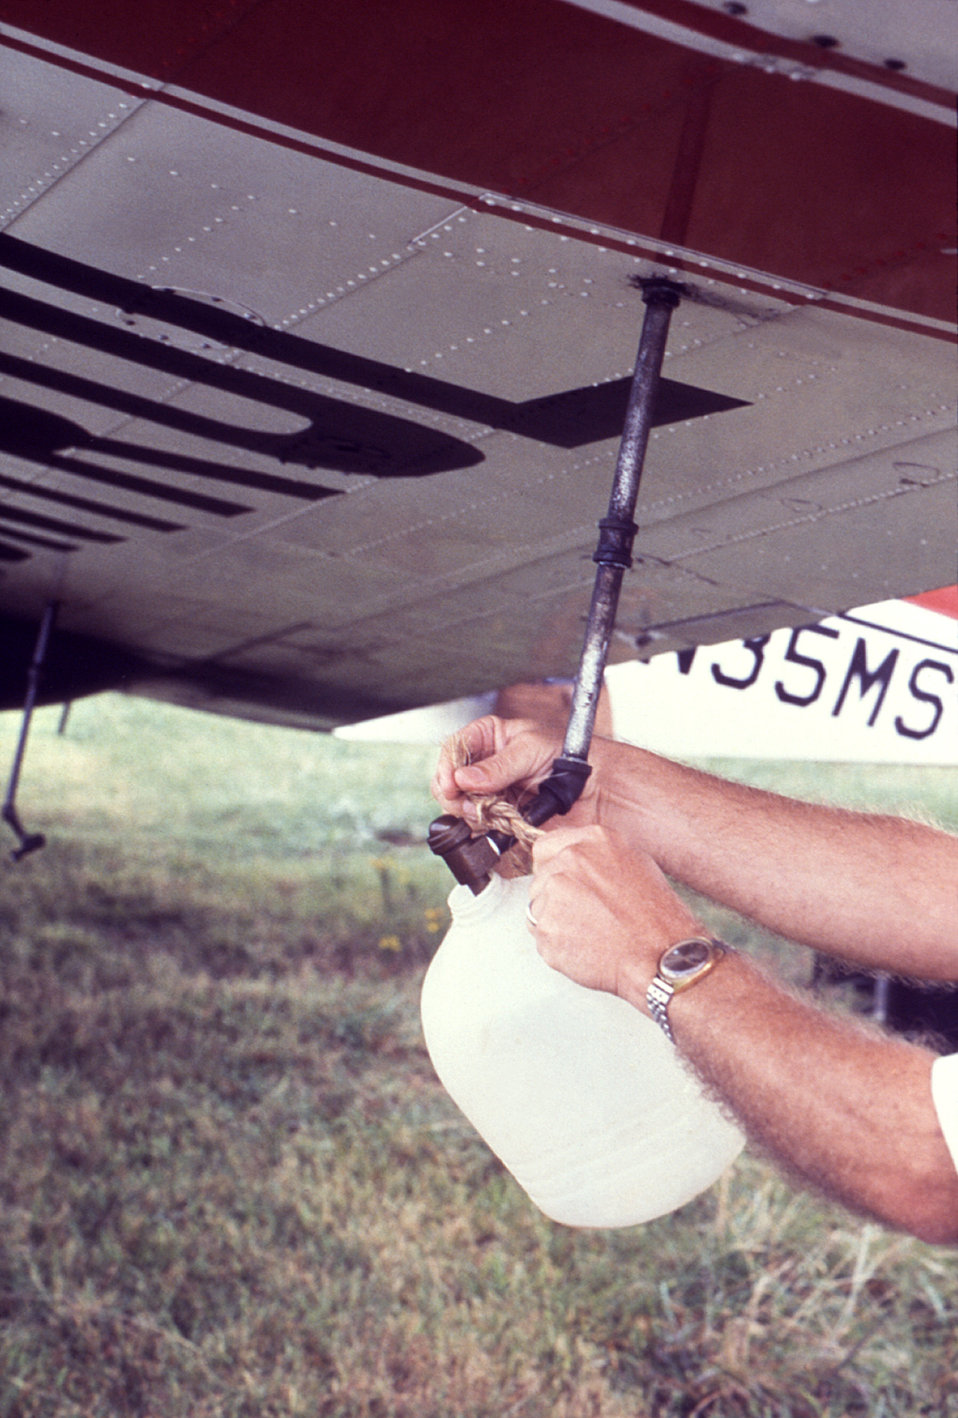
This 1981 photograph depicts a vector-control field technician attaching a one gallon plastic container to a spray nozzle in order to catch the insecticidal spray while he calibrates the spray flow.